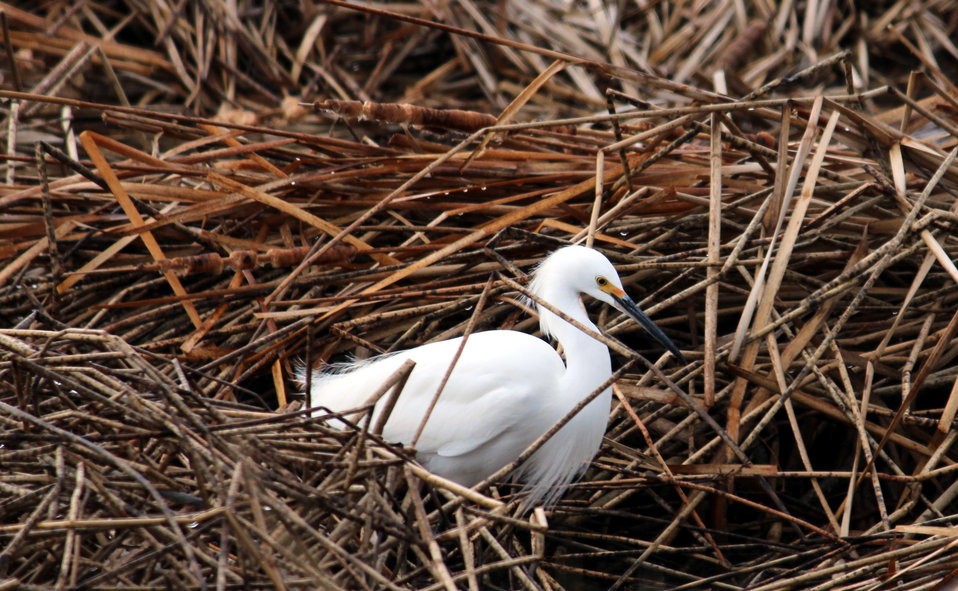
Snowy Egret

This snowy egret was stalking food on the Zahn WPA in Dickey County, North Dakota. It had solid black legs and bright yellow feet that helped to identify it.